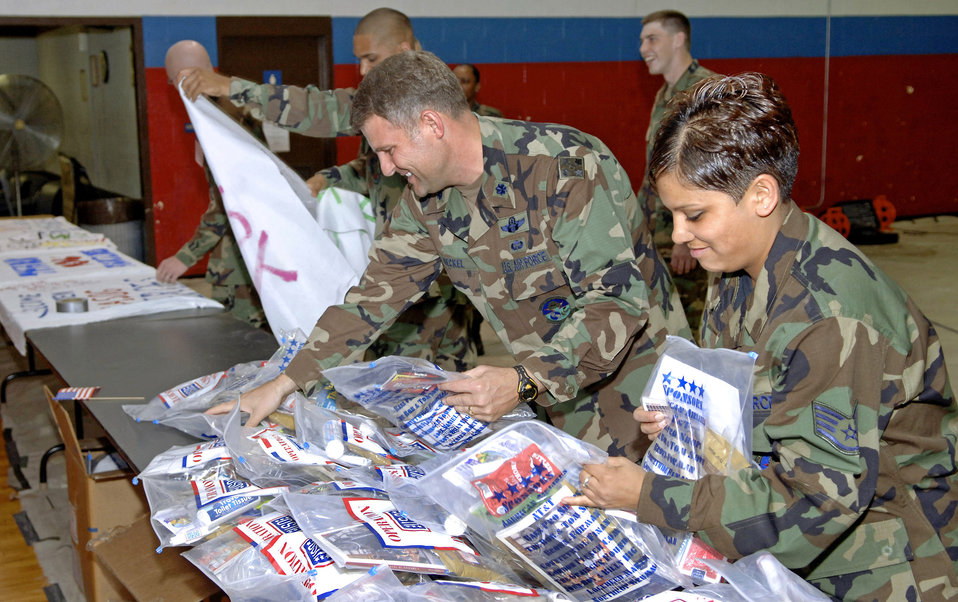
Airmen deployed with Army return home

Lt. Col. Bob Beckel helps Staff Sgt. Blanch Mancillas set up welcome home packets for battlefield Airmen returning to a celebration June 5 at Fort Hood, Texas. The battlefield Airmen from throughout the group returned to Fort Hood following a six-month deployment to Iraq. Colonel Beckel and Sergeant Mancillas are assigned to the 3rd Air Support Operations Group.